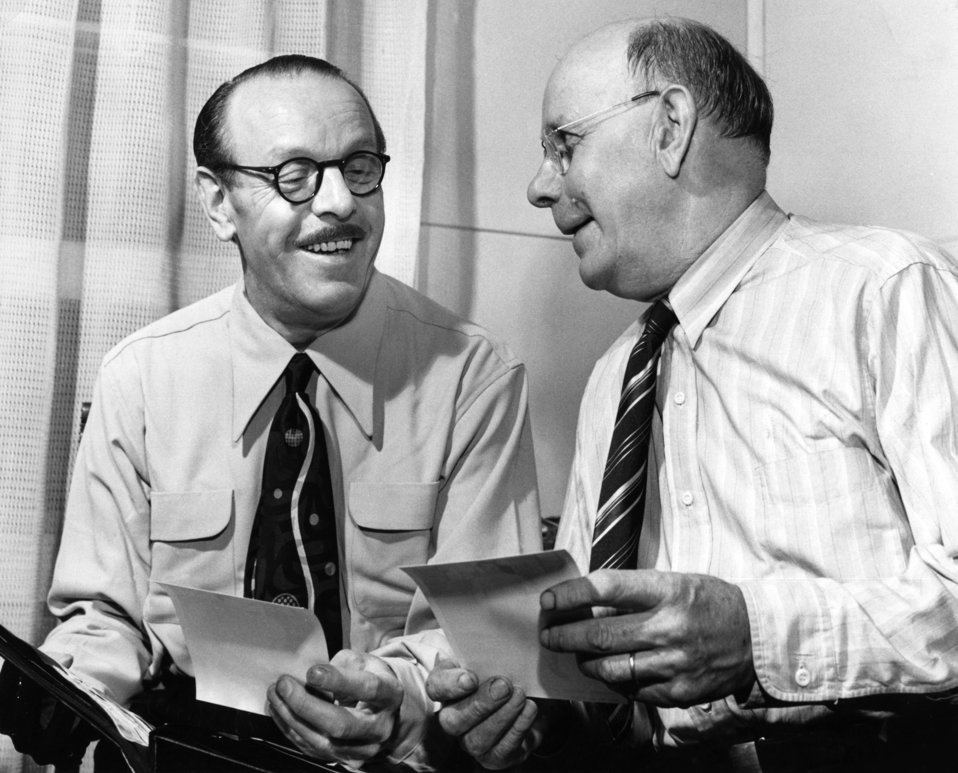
Nels H. Holmstedt and Seo Holmstedt Swedish Boxers Oak Ridge

4252 DOE photo Ed Westcott 1-1948 Oak Ridge Tennessee